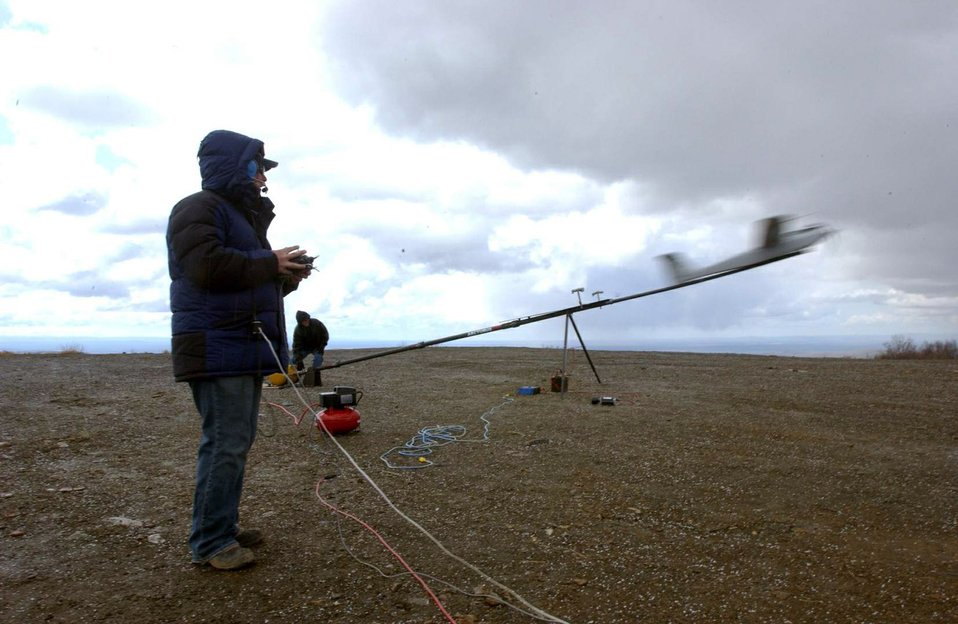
Force multiplier more than buzz word

Red Jensen prepares launches the prototype of the Arcturus unmanned aerial vehicle May 7 during Northern Edge 2008, at a test site in the Pacific Alaska Range Complex. The UAV is a brainchild of the Air Force Research Laboratory and is designed for a myriad of aerial reconnaissance, monitoring and communications duties. Mr. Jensen is the chief pilot for the Arcturus UAV.